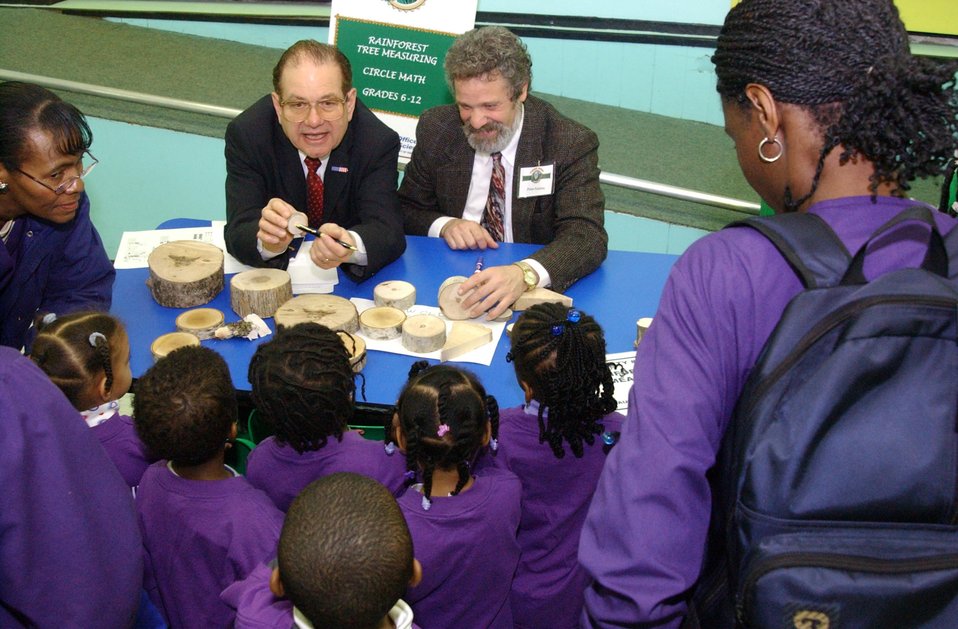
DR. RAYMOND ORBACH, DOE DIRECTOR, OFFICE OF SCIENCE DEMONSTRATES MEASURING AT THE RAIN FOREST TREE MEASURING EXHIBIT.

DR. ORBACH AND PETER FALETRA DOE'S SENIOR TECHNICAL ADVISOR FOR SCIENCE EDUCATION PARTICIPATED IN THE SCIENCE SAFARI AT THE CAPITAL CHILDREN'S MUSEUM ON MARCH 20, 2003. SEVERAL ELEMENTARY SCHOOLS FROM WASHINGTON D.C. ATTENDED AS PART OF THE EXCELLENCE IN SCIENCE, TECHNOLOGY AND MATHEMATICS EDUCATION WEEK. DOE'S OFFICE OF WORKFORCE DEVELOPMENT FOR TEACHERS AND STUDENTS ORGANIZED THE SCIENCE SAFARI AS A PUBLIC/PRIVATE/NONPROFIT EFFORT.